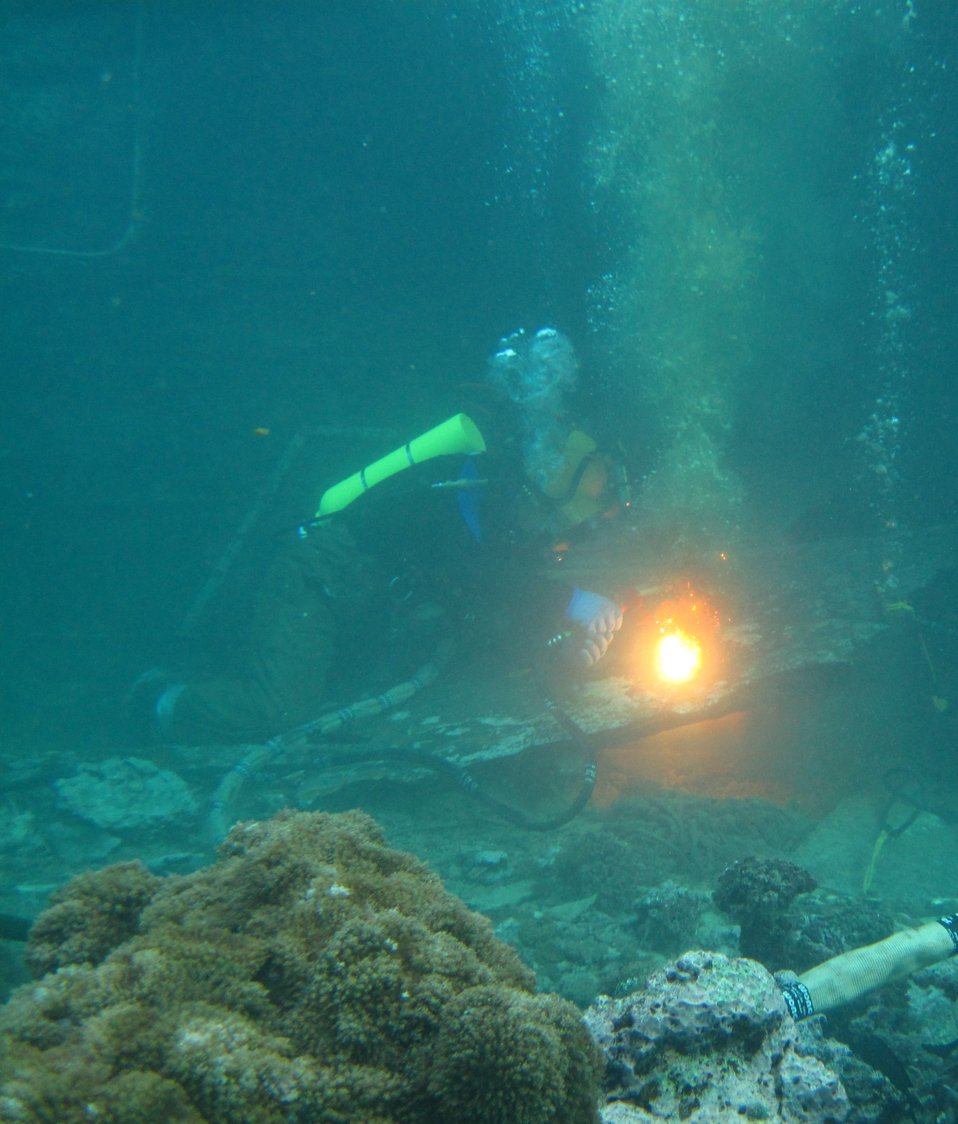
An underwater exothermic torch was used by commercial divers to cut into the F/V Hui Feng No. 1 at Palmyra Atoll National Wildlife Refuge.